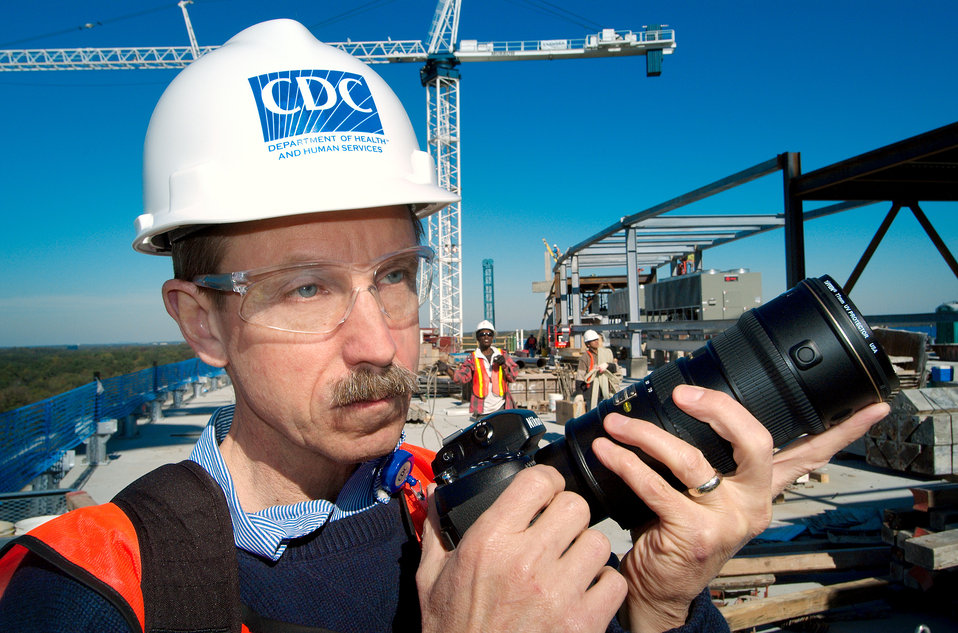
This 2004 image depicted CDC-event photographer Mr. Greg Knobloch, shown here amidst the CDC's Roybal Campus, Building 19 construction site in Atlanta, Georgia. Greg was in the process of photographically documenting the construction progress at the site, and was photographed here by the CDC's biomedical photographer, Mr. James Gathany.